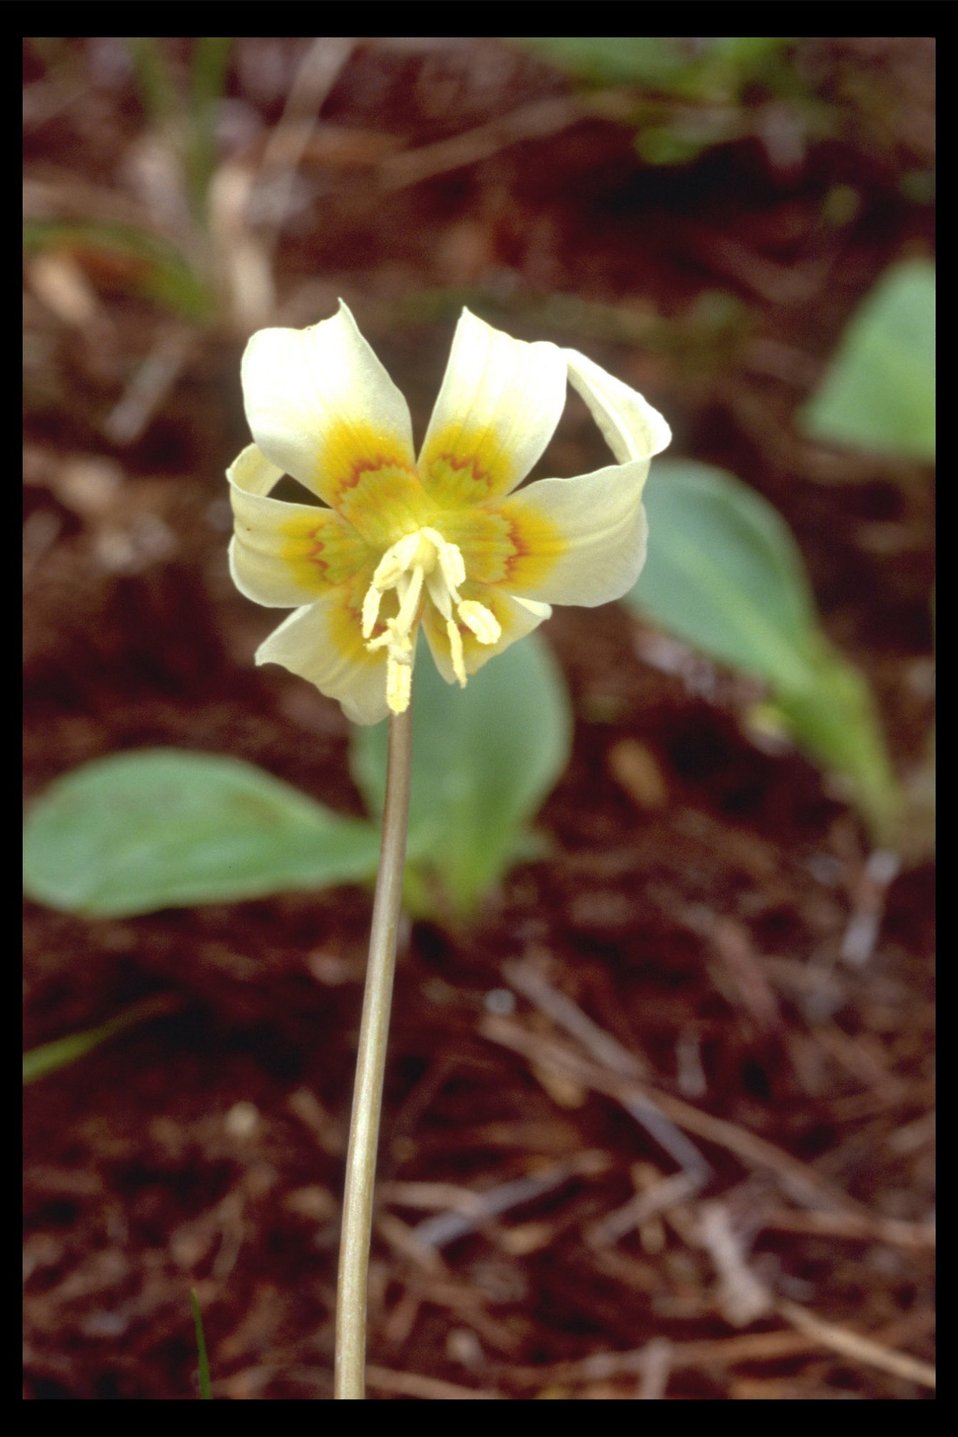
Close up of the Oregon Fawn Lily (Erythronium oregonum) along East Evan's Creek.